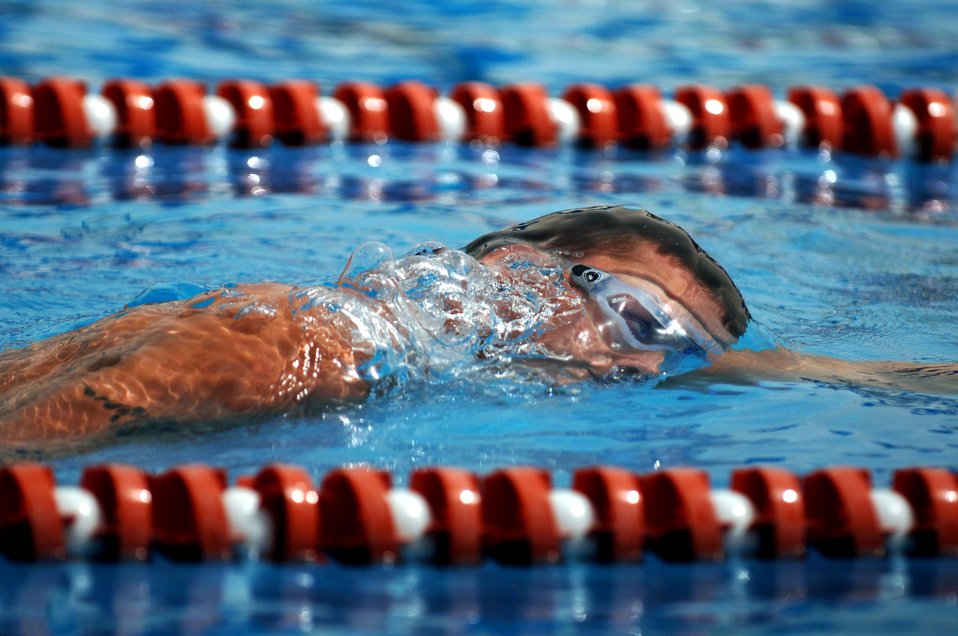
Wing sports day

An Airman swims in the 1,600-meter relay during the 379th Air Expeditionary Wing Sports Day on Sunday, April 23, 2006. Other events at the deployed location in Southwest Asia included volleyball, home run derby, basketball, dodgeball and a